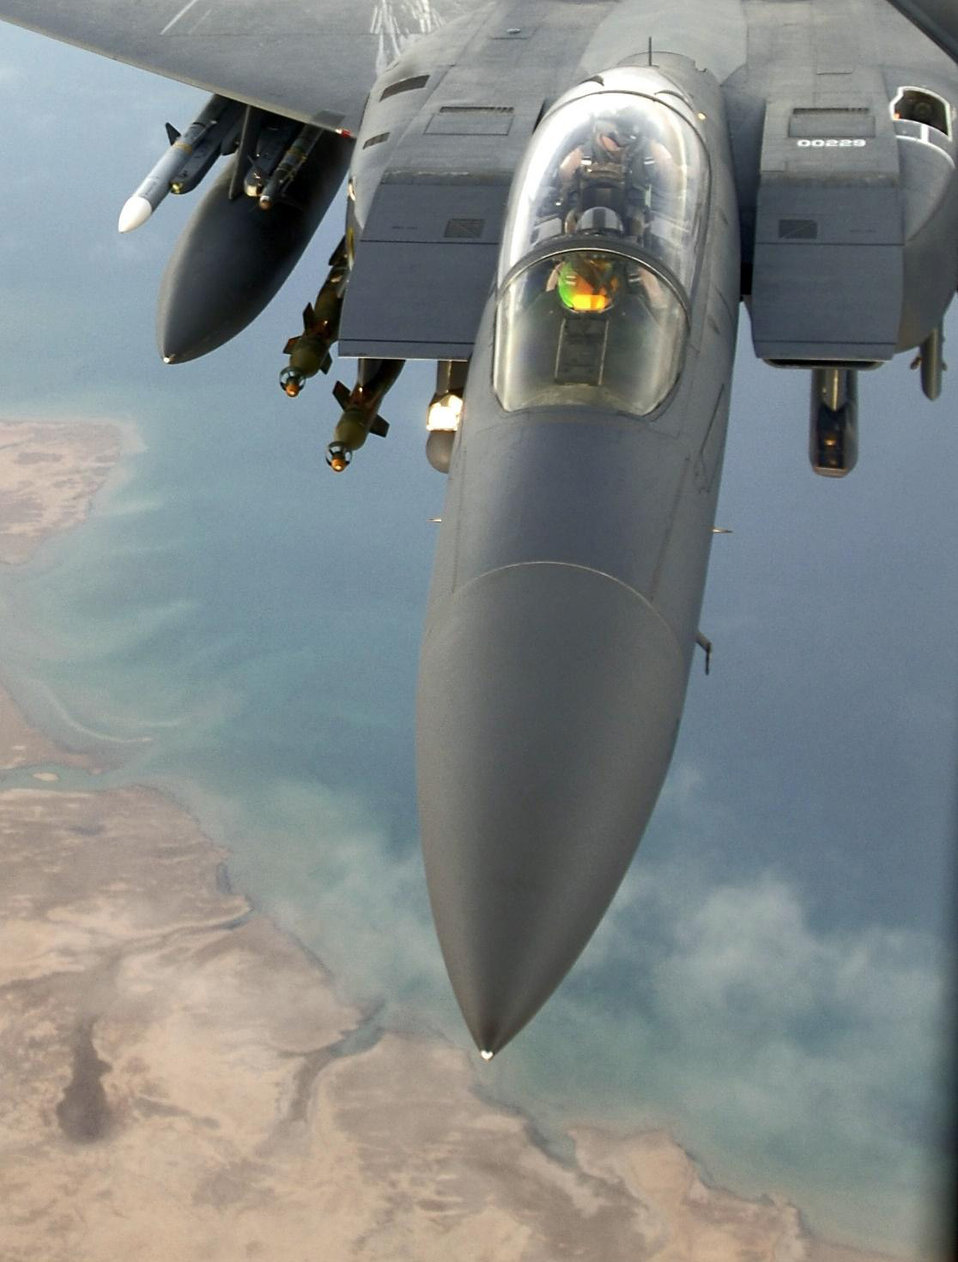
Targeting pods enhance battlefield awareness

An F-15E Strike Eagle flies over a forward-deployed location in Southwest Asia. Aircraft like this are capable of monitoring the battlespace with their targeting pods. This concept is known as non-traditional intelligence, surveillance and reconnaissance.